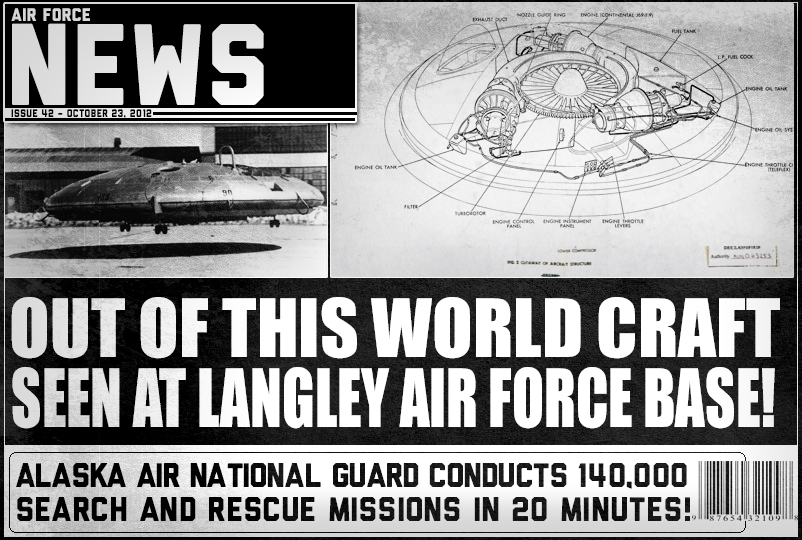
UFO Sighting!